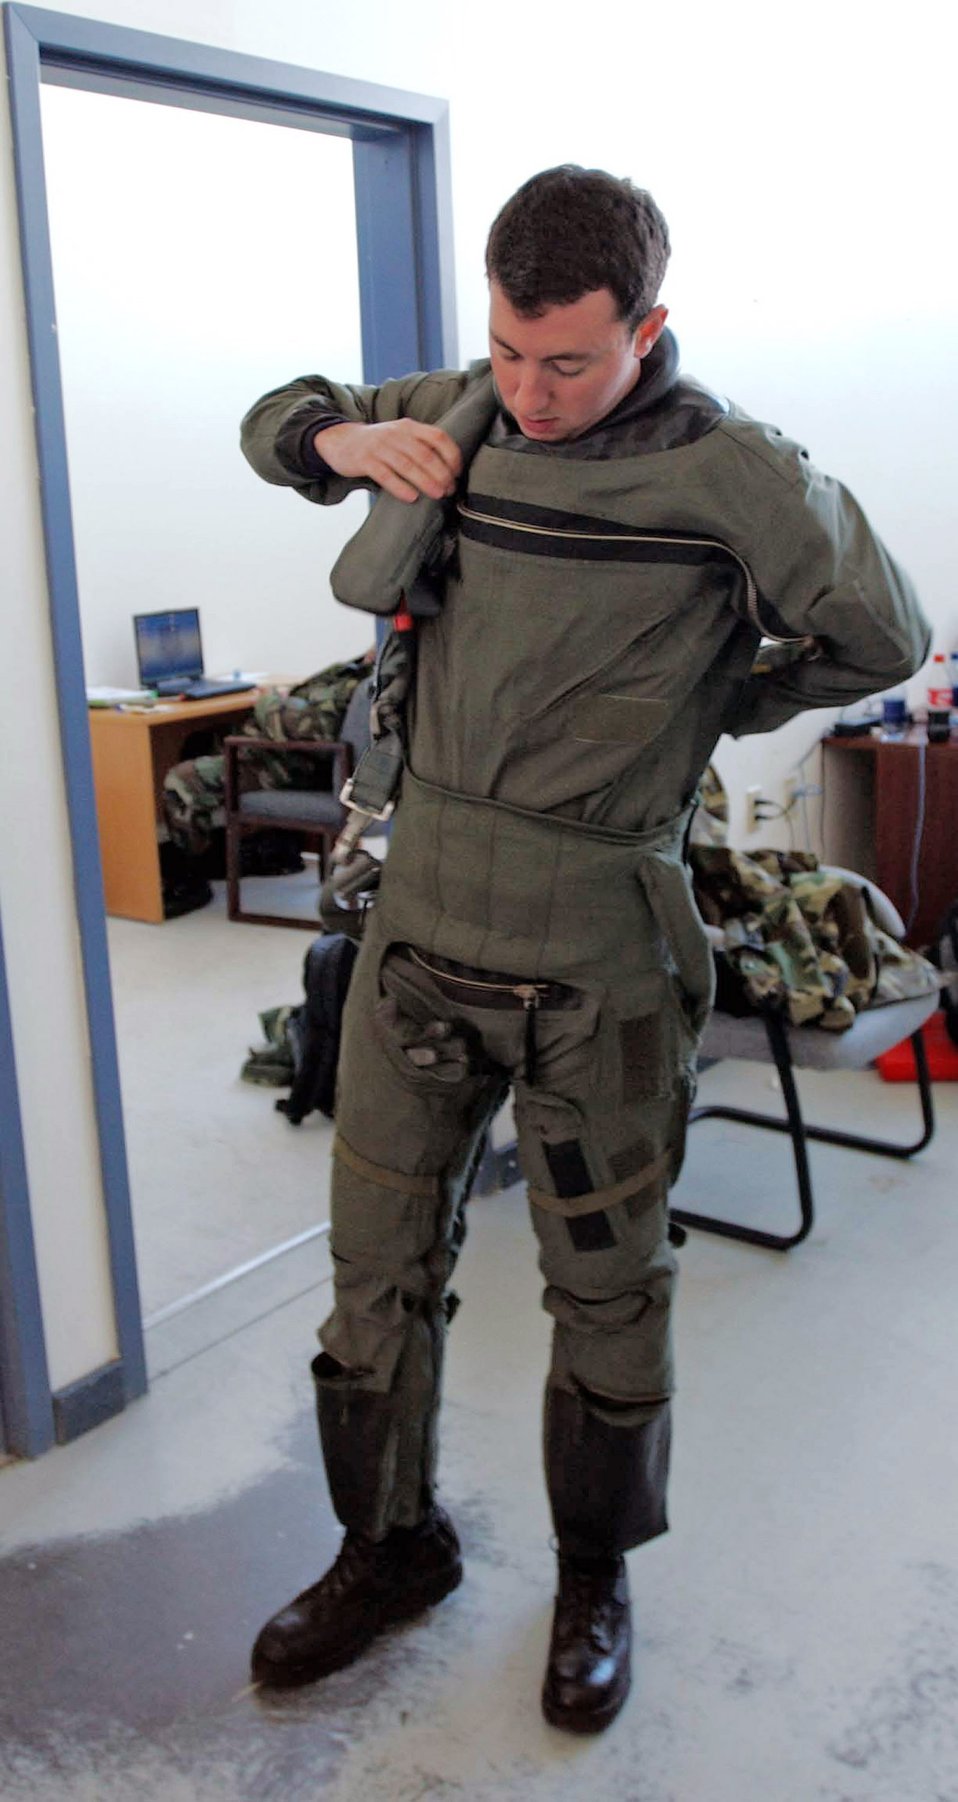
Northern Viking tests command, control capabilities

Capt. David Brill readies himself to fly in support of Northern Viking Aug. 16 at Keflavik Airport, Iceland. Royal Air Force Lakenheath, England, sent three F-15 Eagles to support the Icelandic air defense exercise. Captain Brill is a 493rd Fighter Squadron pilot from RAF Lakenheath.